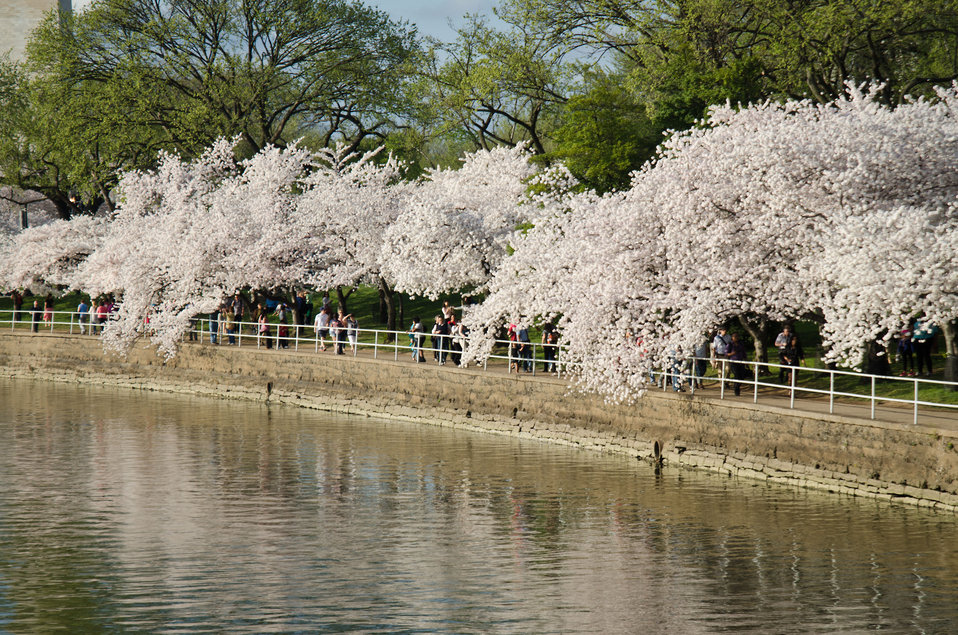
Cherry blossoms at the Tidal Basin in Washington, D.C., on Tuesday, March 20, 2012.